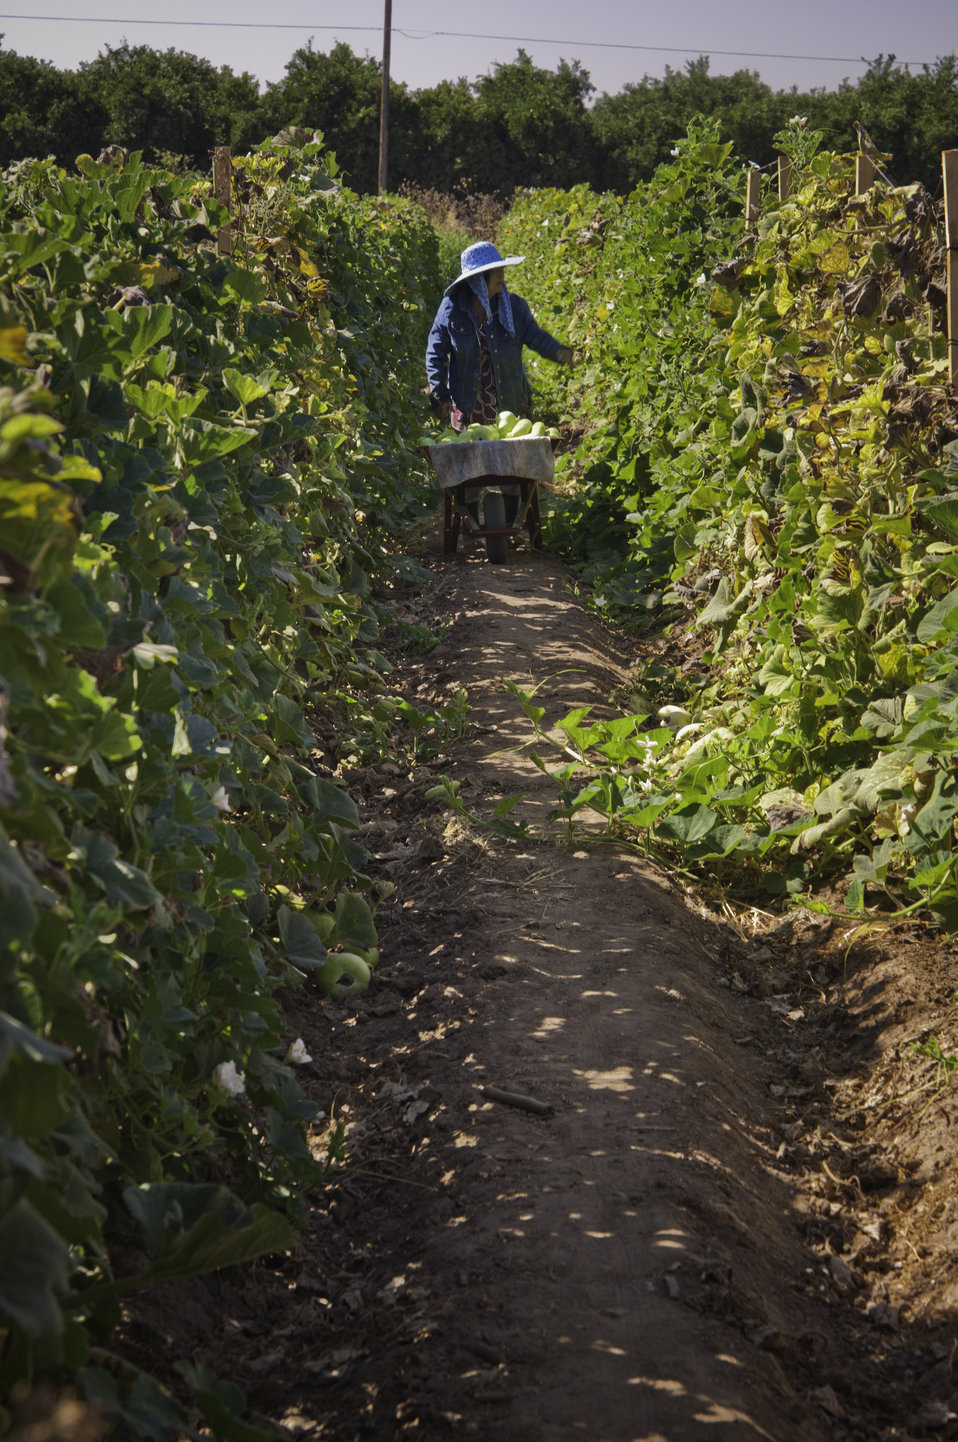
May Young Vu a Hmong farmer taking opo squash harvested in the morning on her farm May's Flower's in Sanger, California to be packed for the farmers market in the afternoon on Thursday, August 29, 2013.